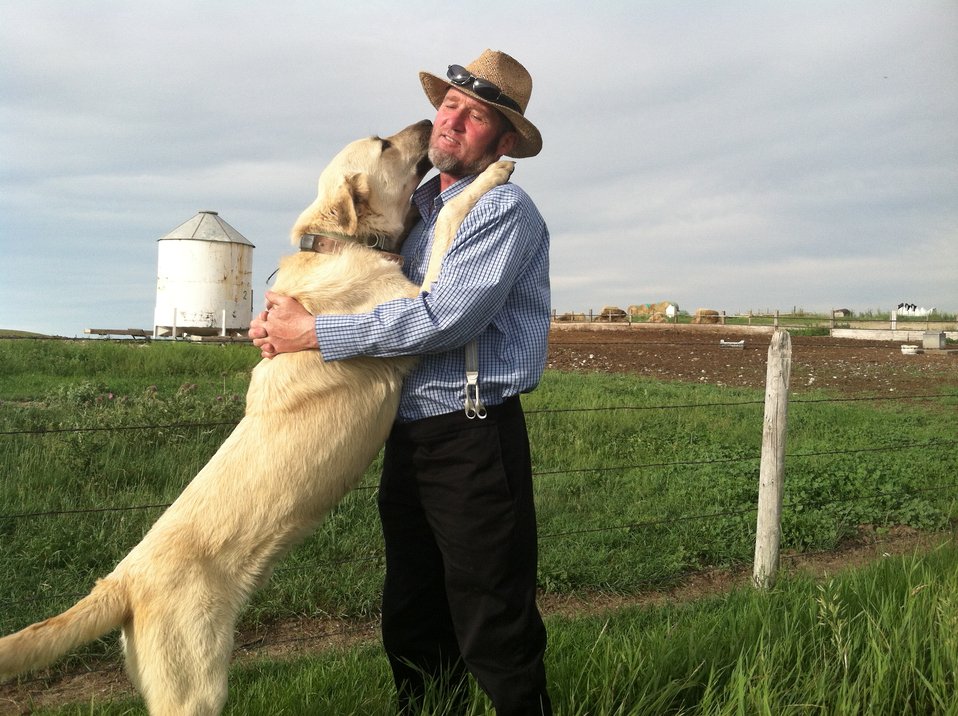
kangal hutteritephoto

Ben Hofer, Rockport Colony Secretary, with a Kangal. NWRC researchers are studying the potential of these livestock guard animals for use where large predators include wolves and grizzly bear. The Kangal breed is gentle and trustworthy with their people or animals, but if the need arises they can become very protective.